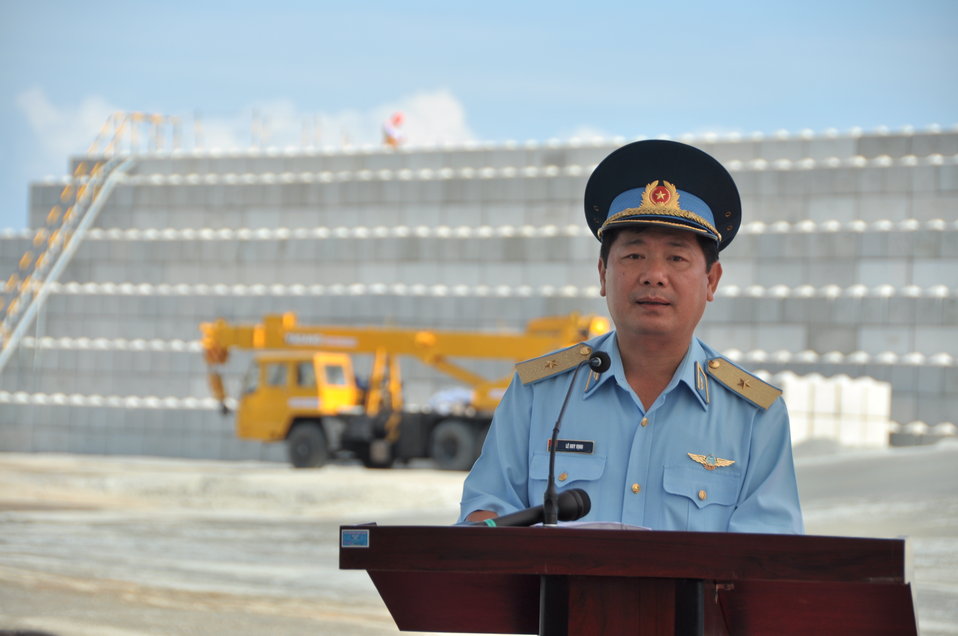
Media Tour of Environmental Remediation of Dioxin Contamination at Danang Airport

Major General Le Huy Vinh addresses the media.

Danang, Vietnam
April 24, 2013